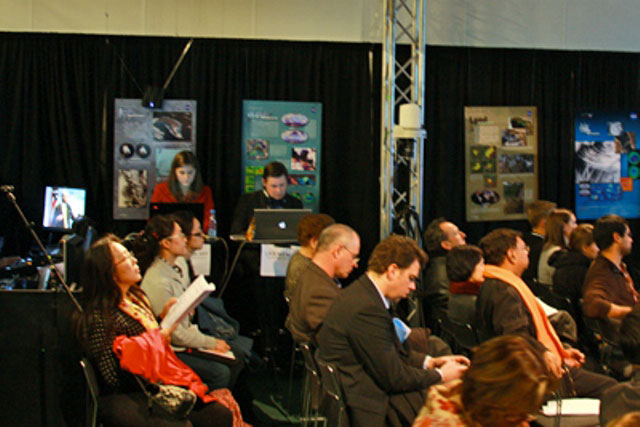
Global Web Chats at COP-15

U.S. Department of State’s Office of International Information Programs coordinates global web chats at the U.S. Center at COP15, Bella Center, Copenhagen, Denmark on December 11, 2009.